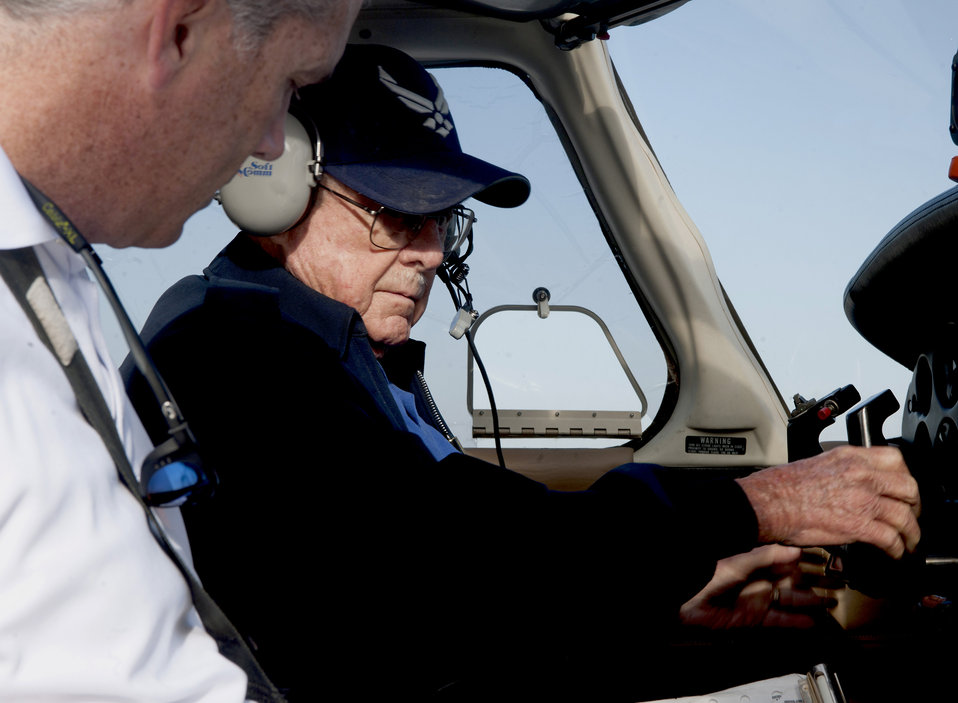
Seven decades of flying

Retired Col. Clarence Parker prepares to take his final flight May 20, 2011, at the Valdosta Regional Airport, in Valdosta, Ga. Colonel Parker has flown for more than 70 years and recently decided to retire from flying at the age of 90.